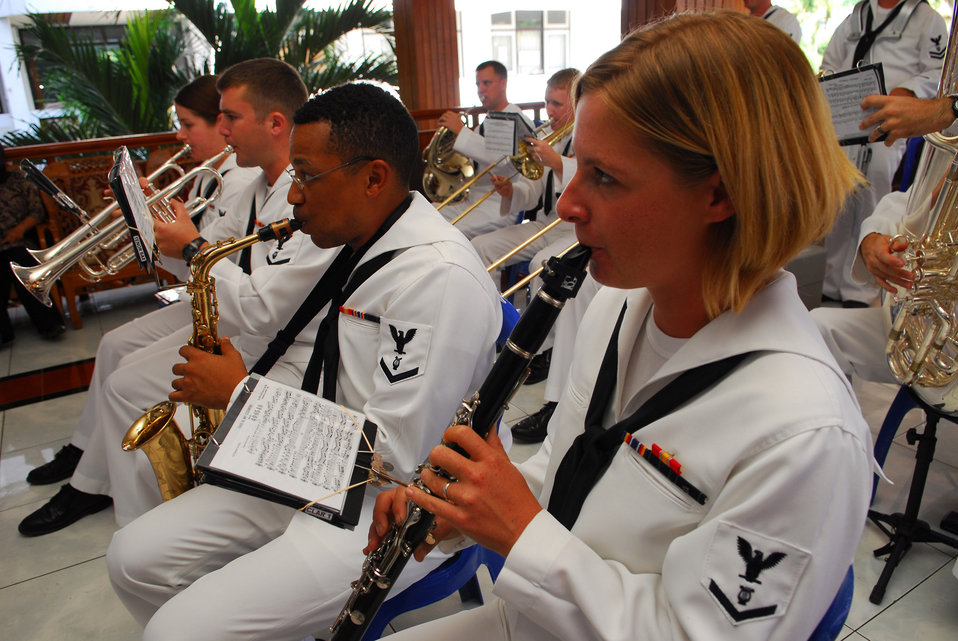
Musician 3rd Class Jackson Plays the Clarinet

Musician 3rd Class Meredith Jackson, a member of the U.S. Pacific Fleet Band, plays the clarinet during the closing ceremony for the Pacific Partnership 2010 visit to Ternate, Indonesia, on July 24, 2010. The Military Sealift Command hospital ship USNS Mercy (T-AH 19) is in the North Maluku Islands conducting Pacific Partnership 2010, the fifth in a series of annual U.S. Pacific Fleet endeavors conducted in Indonesia as a disaster relief exercise aimed at strengthening regional partnerships.